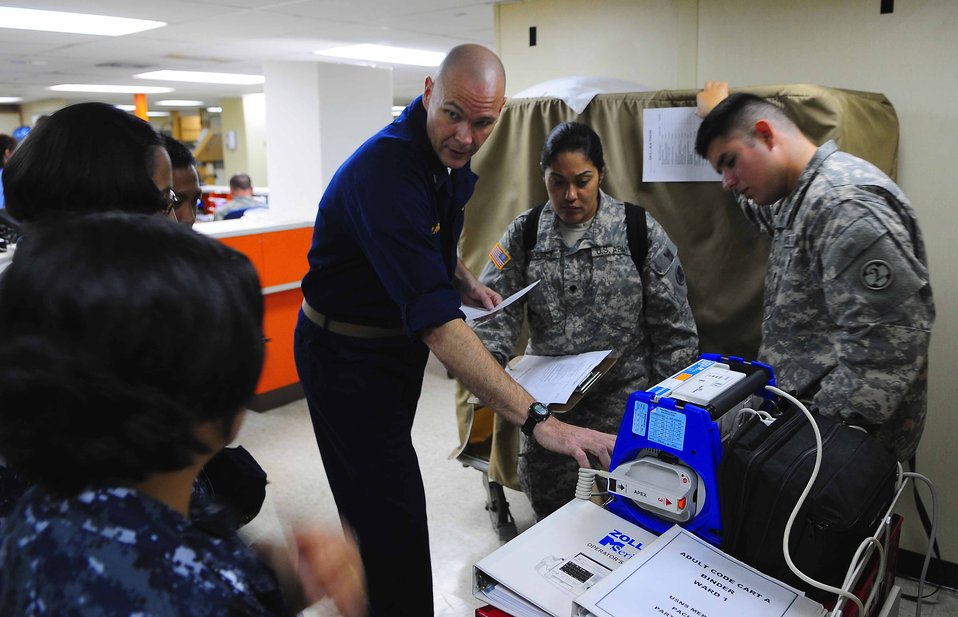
Lt. j.g. Kilpatrick Instructs Medical Providers How To Accurately Read a Defibrillator

Lt. j.g. James Kilpatrick instructs medical providers how to accurately read a defibrillator during a medical skills training exercise aboard the Military Sealift Command hospital ship USNS Mercy (T-AH 19) on August 10, 2010. Mercy is currently transiting to Timor-Leste in support of Pacific Partnership 2010, a humanitarian assistance and disaster relief endeavor throughout Southeast Asia aimed at strengthening regional partnerships.